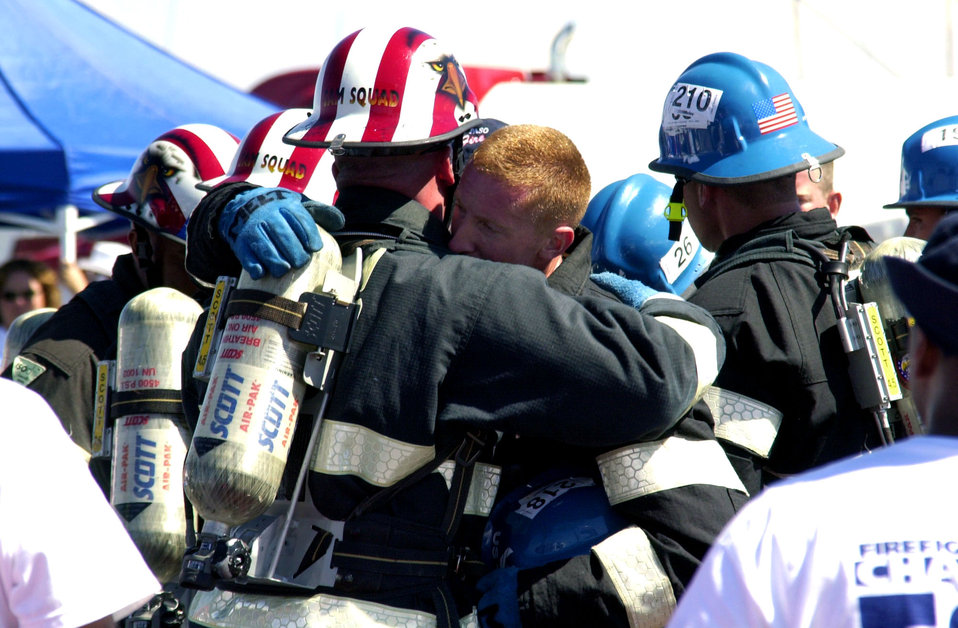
Firefighter combat challenge

EL PASO, Texas -- Staff Sgt. Mike Melton is congratulated by a fellow firefighter after the firefighting team from Travis Air Force Base, Calif., won the relay event with the third fastest time of the 2003 firefighter combat challenge season. Melton is the team's captain.